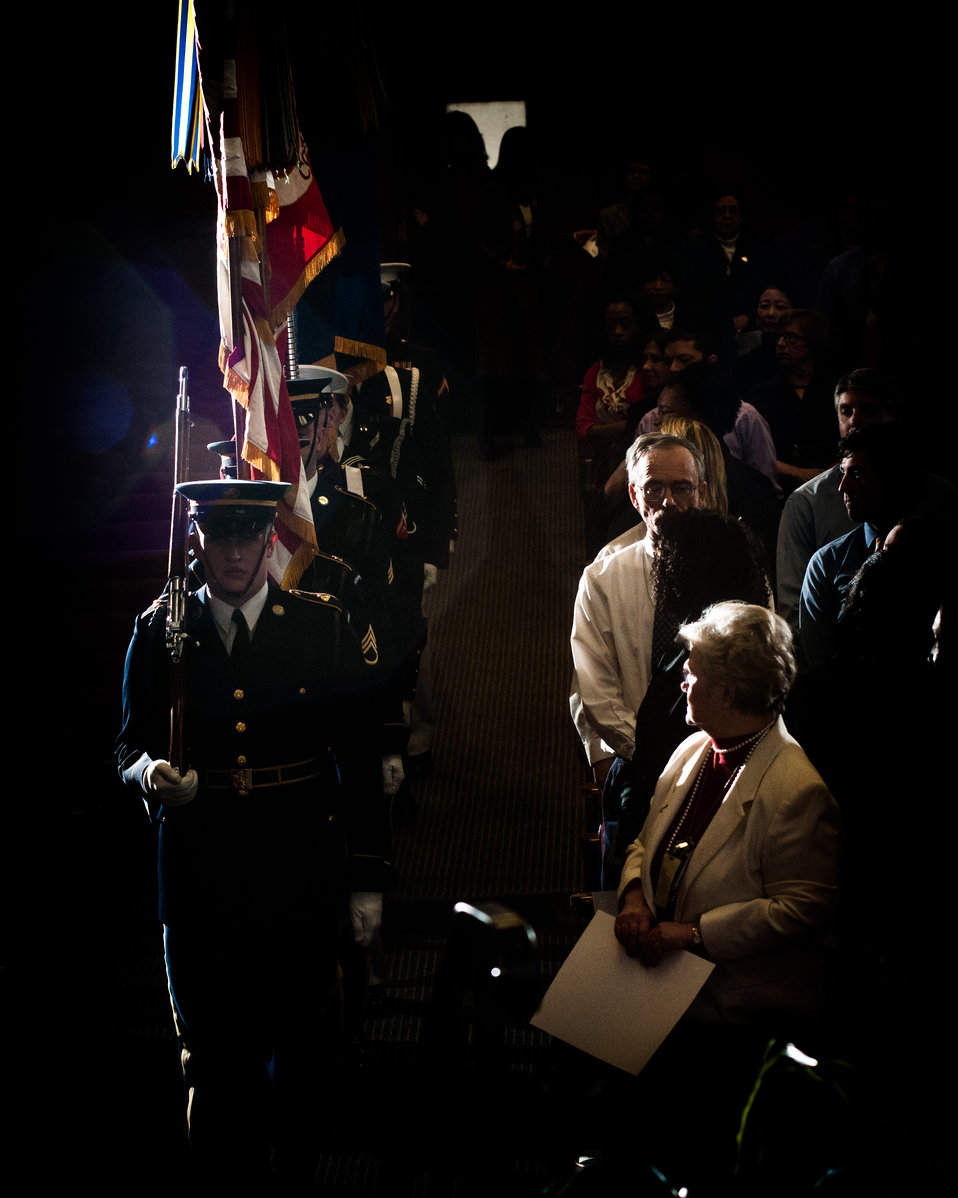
The U.S. Military District of Washington Joint Armed Forces Color of Guard provides the Presentation of Colors at the 2013 Women’s History Month Observance in the Jefferson Auditorium, during the “Women Inspiring Innovation Through Imagination: Celebrating Women in Science, Technology, Engineering, and Mathematics” event, on Thursday, March 21, 2013, in Washington, D.C. Some people audience notices that the Navy Color Guard is female.